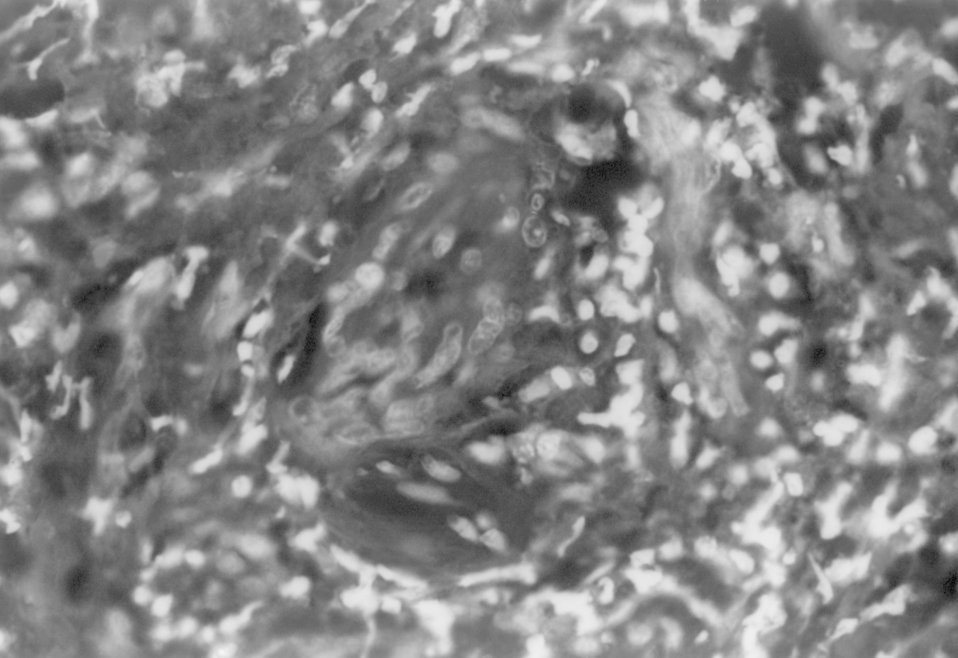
A photomicrograph of a condyloma latum lesion, indicative of secondary syphilis.